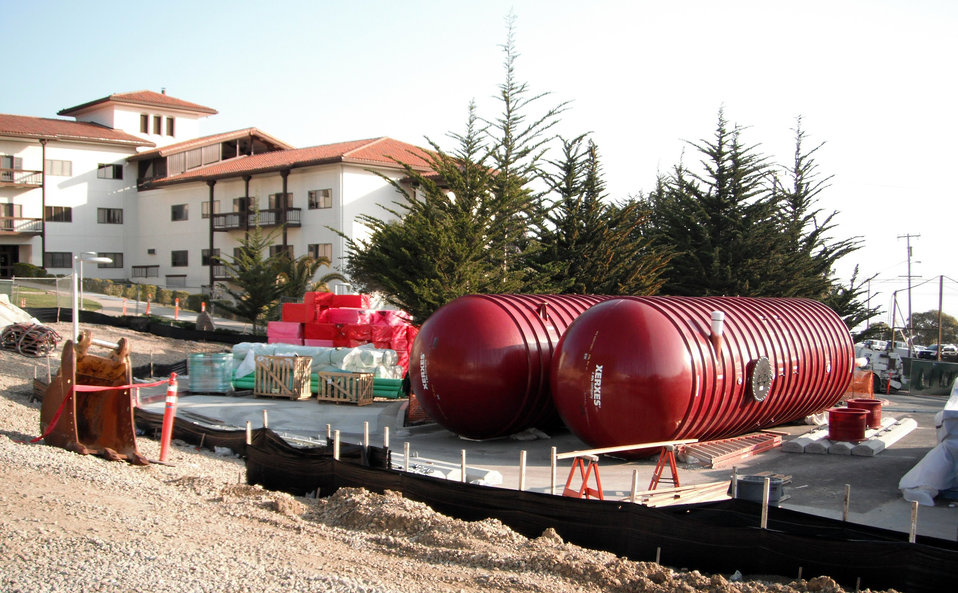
Going Green: Ancient technology helps Corps build green at Presidio

Two 20,000-gallon tanks await placement next to the construction site for a new general instruction building at the Presidio of Monterey, Calif., March 22, 2013. The U.S. Army Corps of Engineers Sacramento District is overseeing construction of the building, which is designed to reach a silver rating under the Leadership in Energy and Environmental Design program. The dual 20,000-gallon tanks will collect rain water from parking lots surrounding the building to supply an irrigation system.